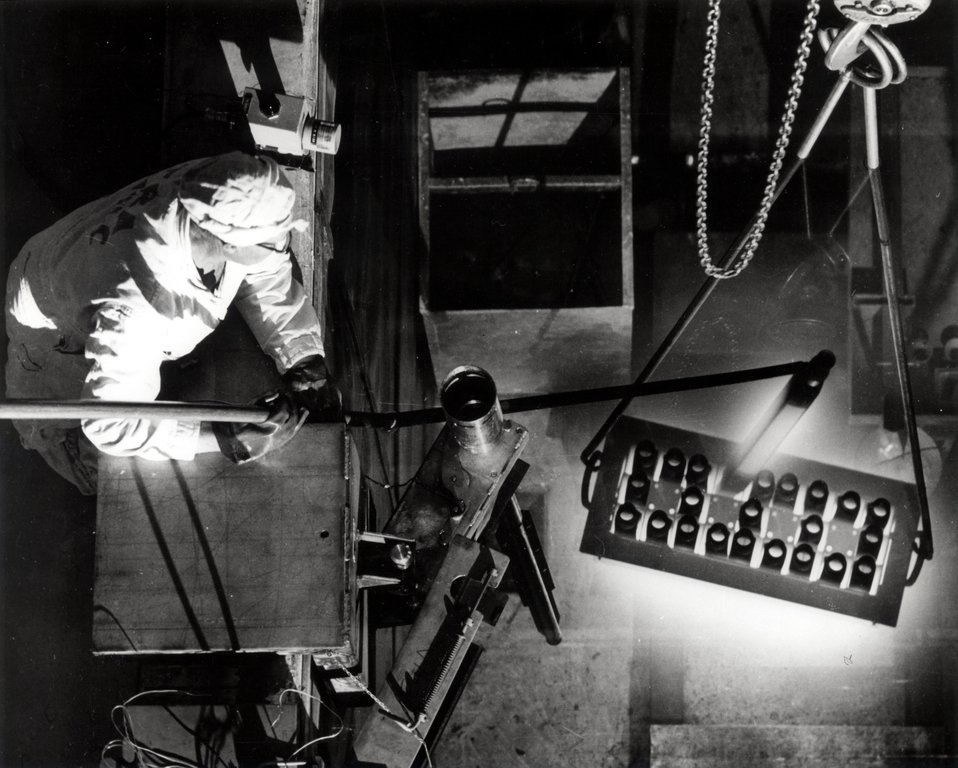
Storage canal at the Materials Testing Reactor showing Cerenkov glow from irradiated fuel elements at the U.S. Atomic Energy Commission's National Reactor Testing Station in Idaho.
Circa 1974.